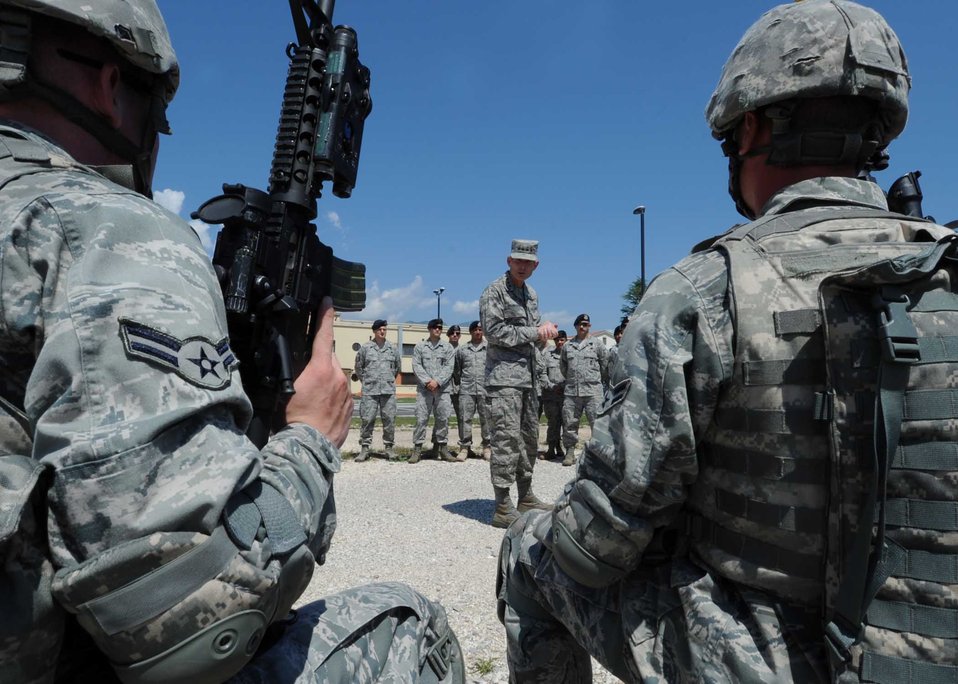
Chief of staff and spouse visit Aviano Air Base

Air Force Chief of Staff Gen. Norton Schwartz addresses Airmen from the 31st Security Forces Squadron July 12, 2011, at Aviano Air Base, Italy. The general observed the 31st SFS mission as part of his visit to the base.